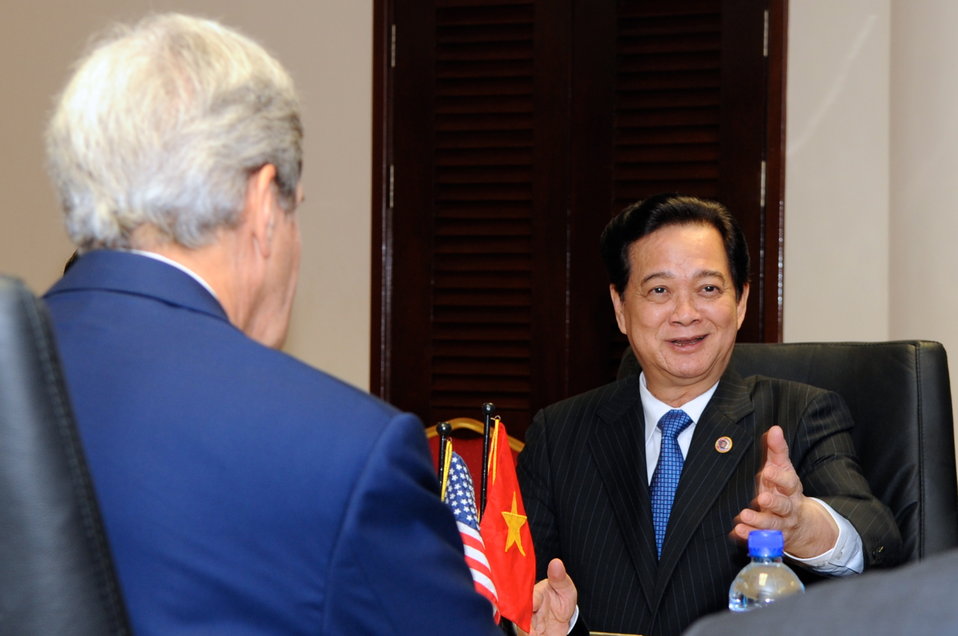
Vietnamese Prime Minister Dung Speaks With Secretary Kerry

Vietnamese Prime Minister Nguyen Tan Dung speaks with U.S. Secretary of State John Kerry during a bilateral meeting at the margins of the ASEAN Summit in Bandar Seri Begawan, Brunei, on October 10, 2013.